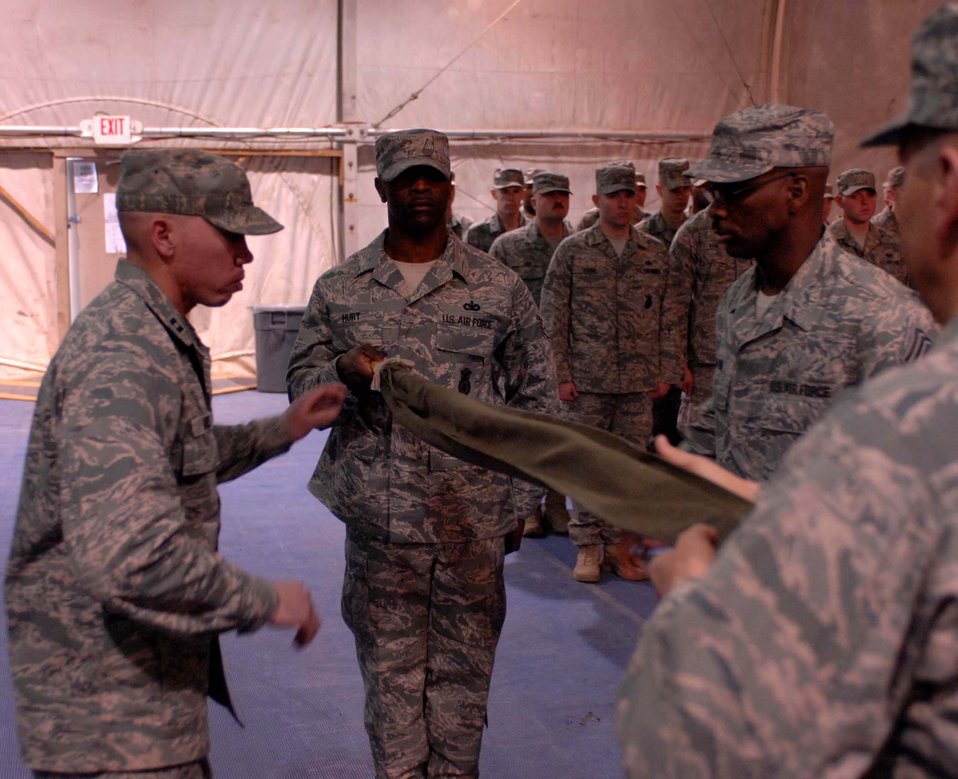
Bagram security forces Airmen pass torch as unit inactivates

The 755th Expeditionary Security Forces Squadron guidon is cased Jan. 11 at Bagram Air Base, Afghanistan. The squadron, originally formed in May 2006 in response to a Army request for support of its detainee operations mission, was inactivated during a formal ceremony Jan. 11 here.